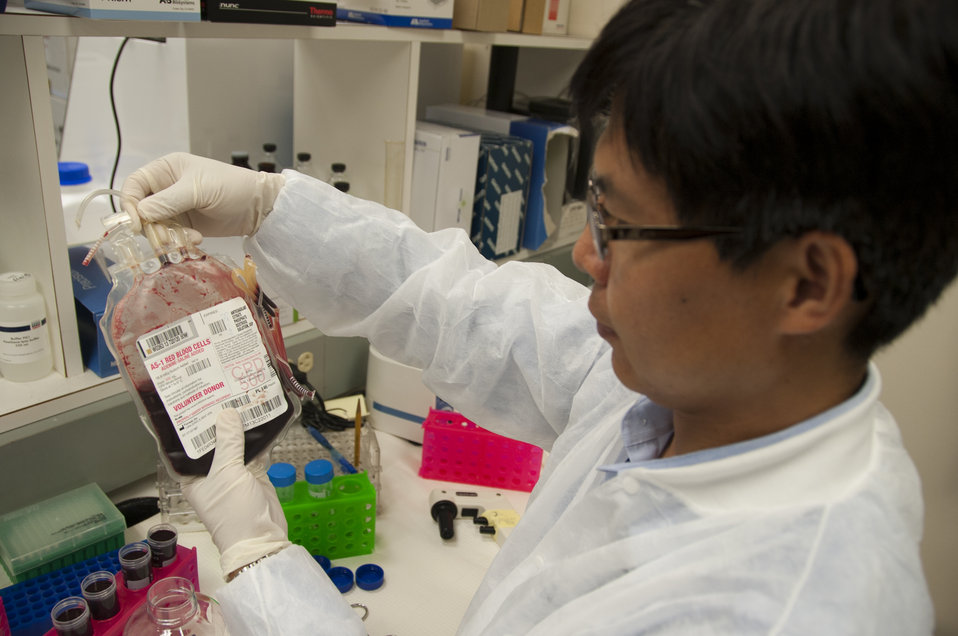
Blood Research: Saving Lives (8364)

Jason Liu, Ph.D., laboratory chief at FDA’s Office of Blood Research and Review, transferring blood to 50 ml tubes as he prepared to isolate blood components. A unit of whole blood can be separated, for example, into platelets and red blood cells. The separated components can be studied separately and can be used for different patients with different needs. FDA is responsible for the safety of our nation’s blood supply and is at the forefront of evaluating and encouraging innovative technologies for protecting it.

Read this Consumer Update to learn more: Advances in Saving Lives with Blood